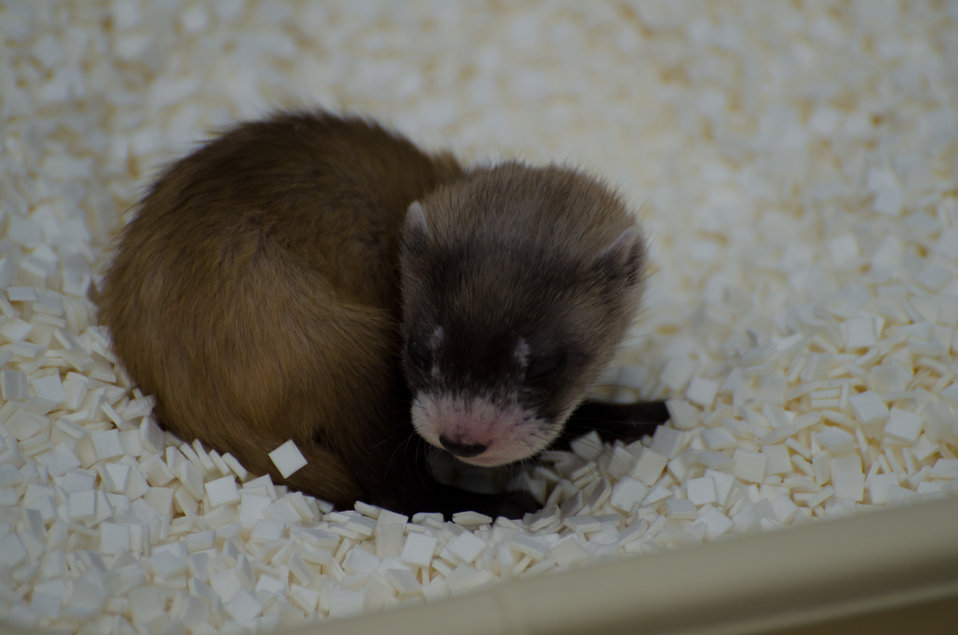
Black-footed Ferret Kit

Part of the tour included observation of some recent additions to the recovery effort, such as this kit sill living with its mother in captivity until ready for release into the outdoor conditioning pens.